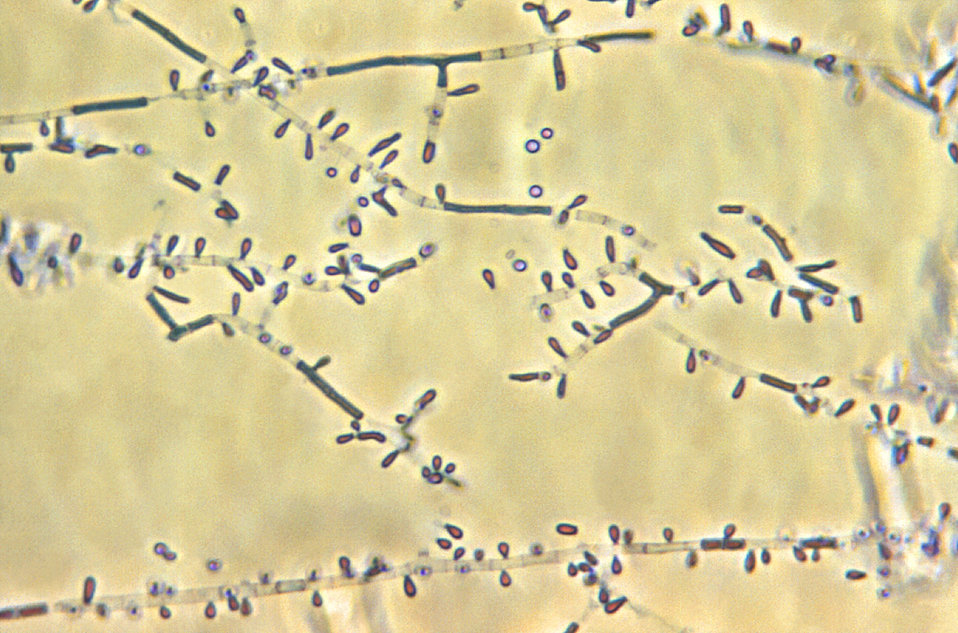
This photomicrograph reveals the microconidia of the fungus Trichophyton rubrum.